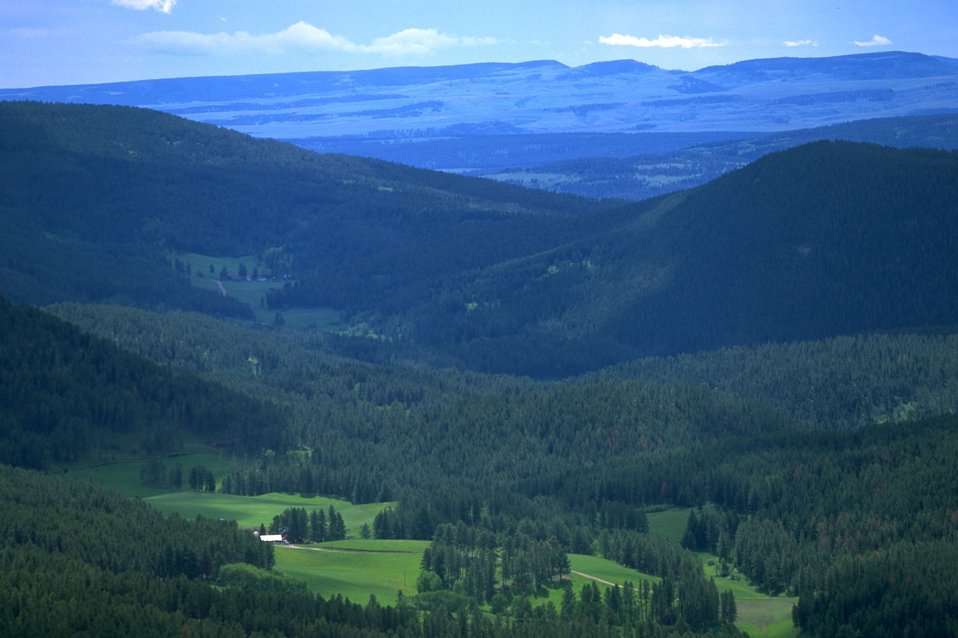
Scenic view of the mountains and valleys in the Judith Mountains